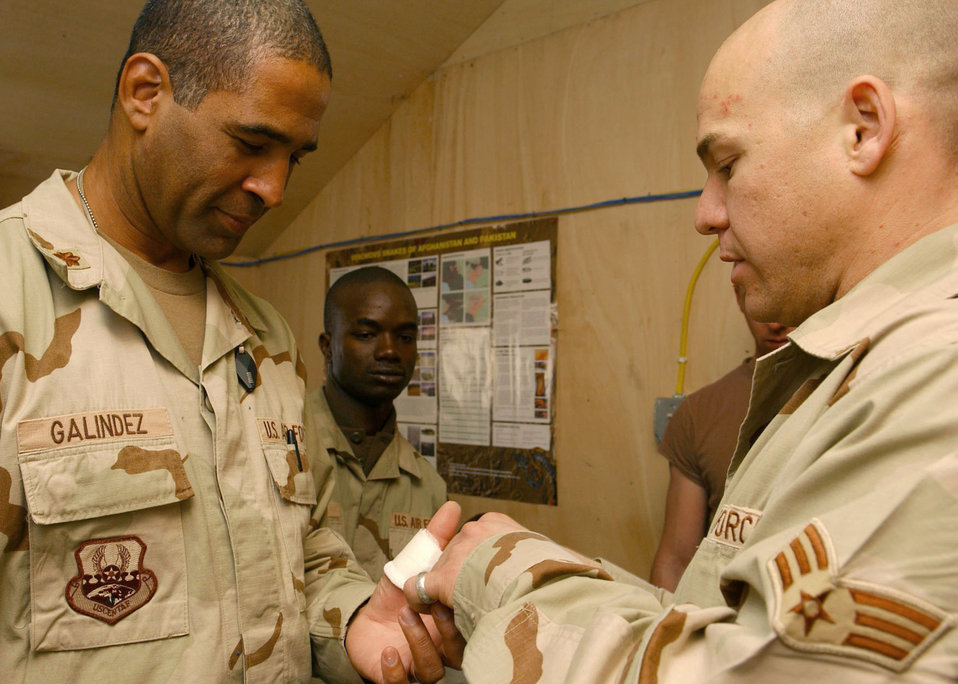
Buddy care live

BAGRAM AIR BASE, Afghanistan -- Senior Airman Jason Weiss bandages Maj. Peter Galindez's finger while Airman 1st Class Anthony Cannon, a security forces patrolman, watches the procedure. The medical technician was instructing a self-aid buddy care refresher course to 455th Expeditionary Security Forces Squadron Airmen when the major walked into the clinic with a deep cut on his hand. Airman Weiss is assigned to the 455th Air Expeditionary Wing's flight medicine clinic. He is deployed from Spangdahlem Air Base, Germany.